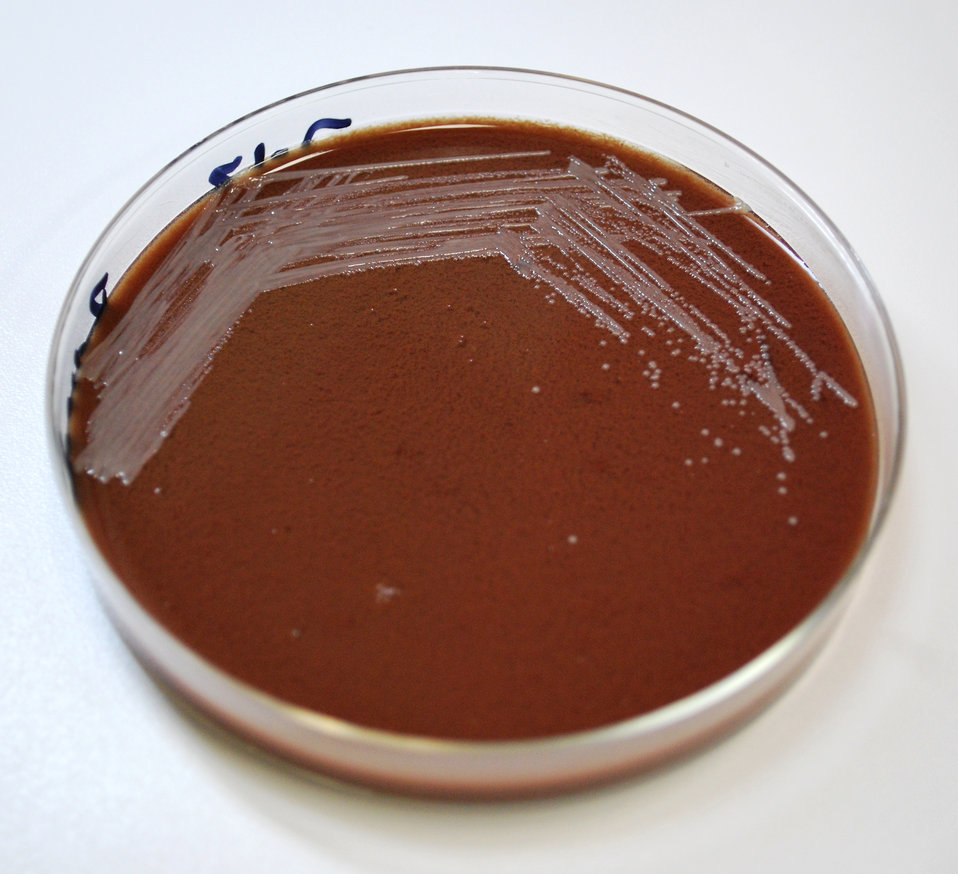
This image depicts a Petri dish containing a chocolate agar medium, which had been inoculated with Gram-negative Francisella tularensis live vaccine strain (LVS) bacteria. F. tularensis is the pathogen responsible for causing the disease tularemia. This was the appearance of the colonial growth after 48 hours of incubation. What is tularemia?